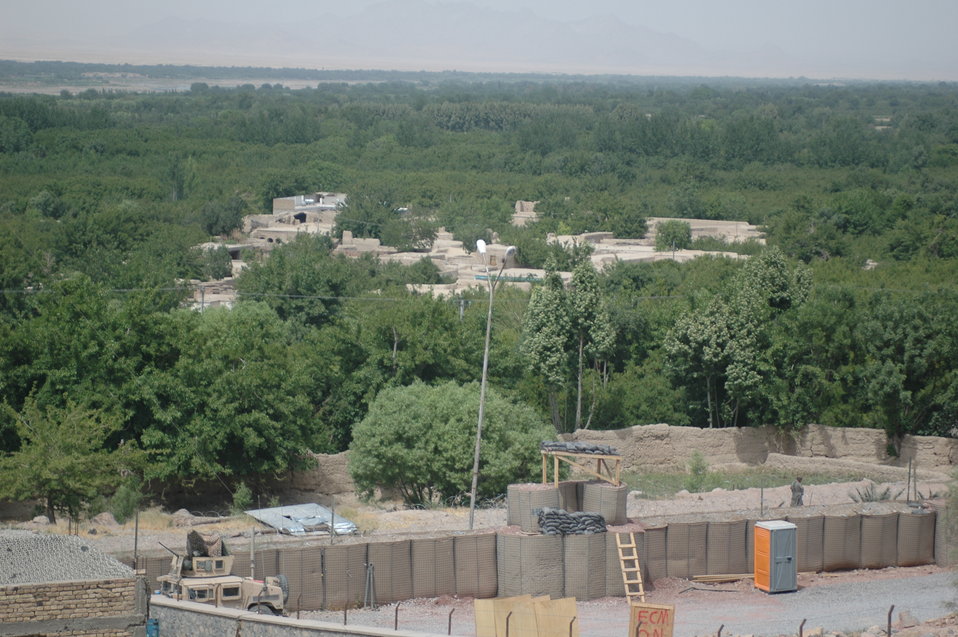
Dr Shah Visits Kandahar April 9, 2010